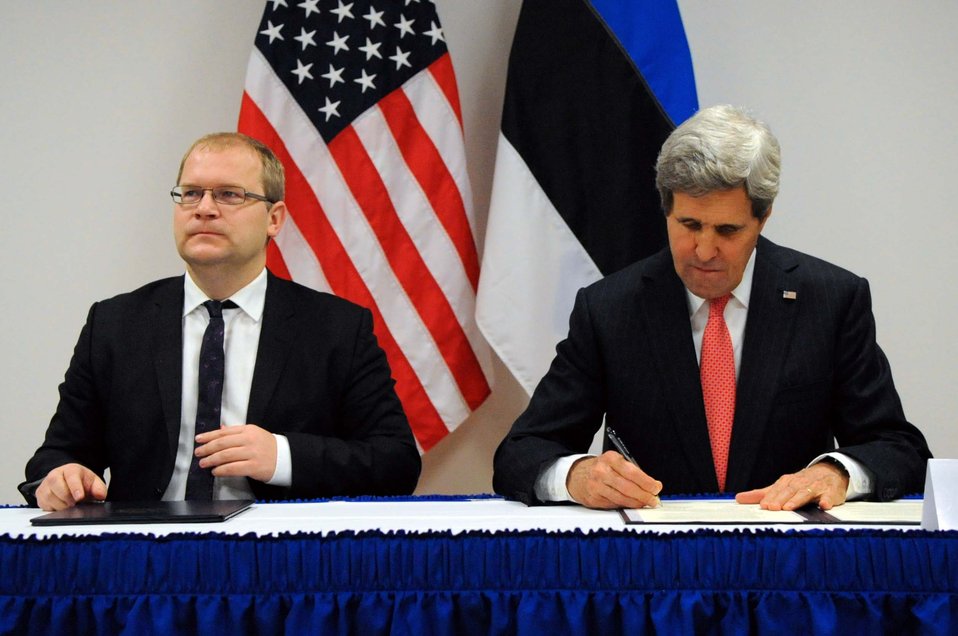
Secretary Kerry and Estonian Foreign Minister Paet Sign the U.S.-Estonia Cyber Partnership Statement

U.S. Secretary of State John Kerry participates in the U.S.-Estonia Cyber Partnership Statement Signing Ceremony with Estonian Foreign Minister Urmas Paet on the margins of a NATO Ministerial meeting in Brussels, Belgium, on December 3, 2013.